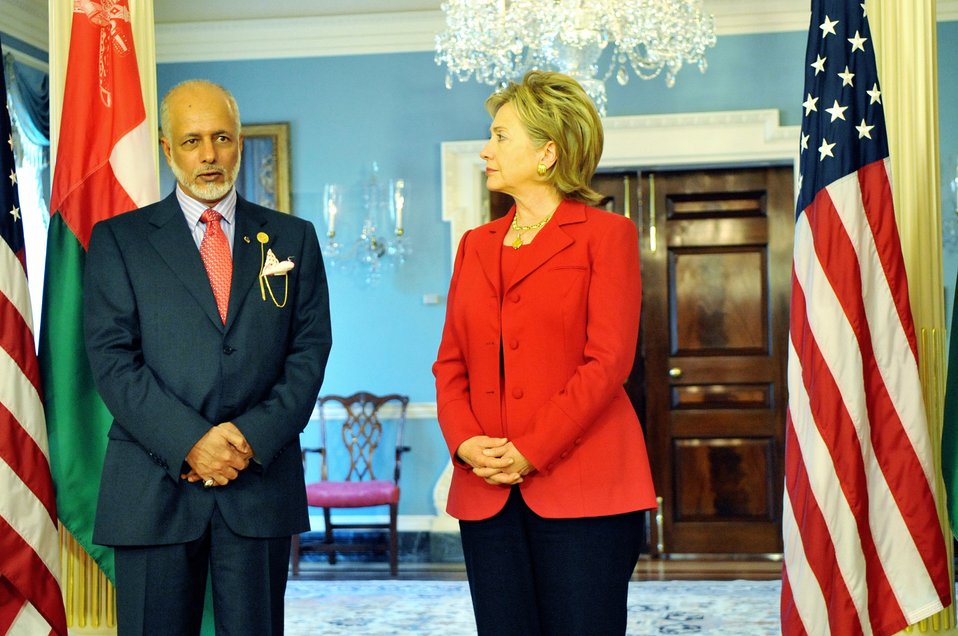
Secretary Clinton Meets Omani Foreign Minister

U.S. Secretary of State Hillary Rodham Clinton and Omani Minister Responsible for Foreign Affairs Yusuf bin Alawi bin Abdullah after their meeting in Washington, DC April 21, 2009.